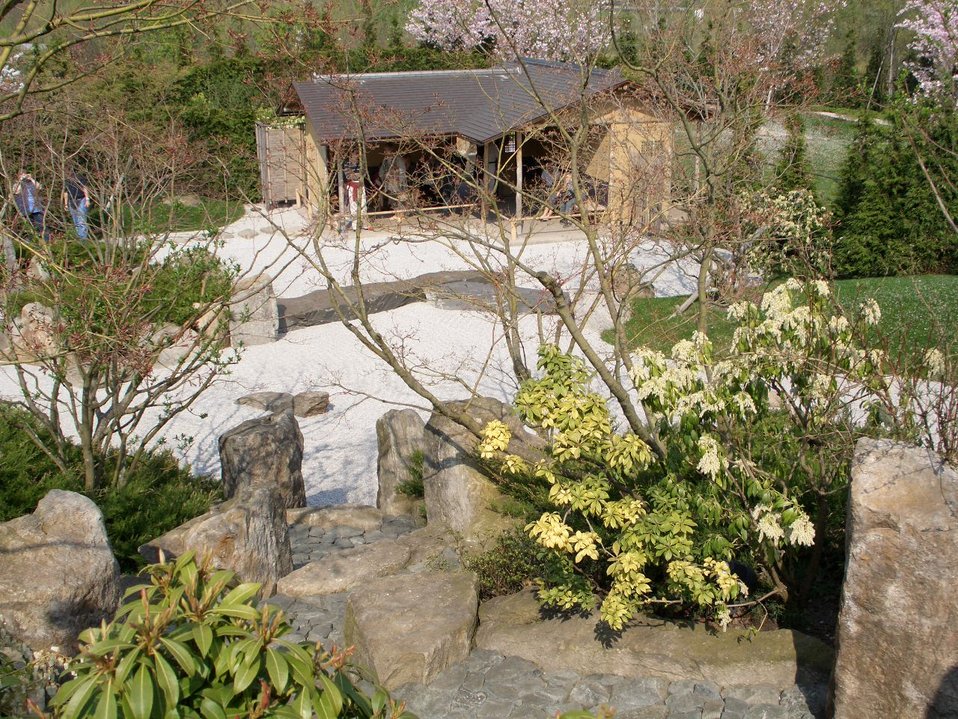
Deutsch: Japanischer Garten im Erholungspark Marzahn